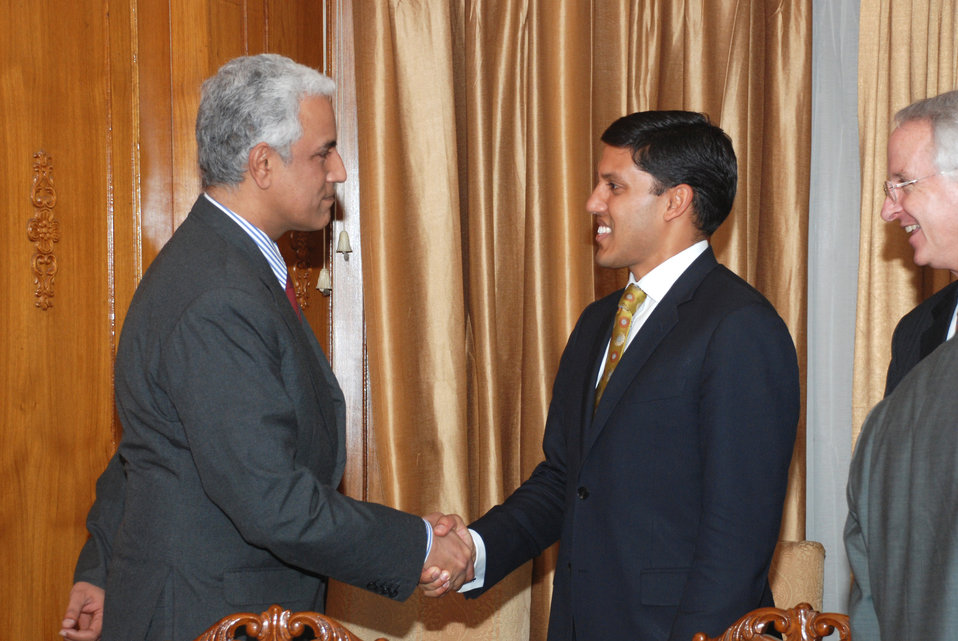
US officials Meeting with Minister of Foreign Affairs, Assistance to Pakistan Remains Strong at Islamabad on April 14, 2012